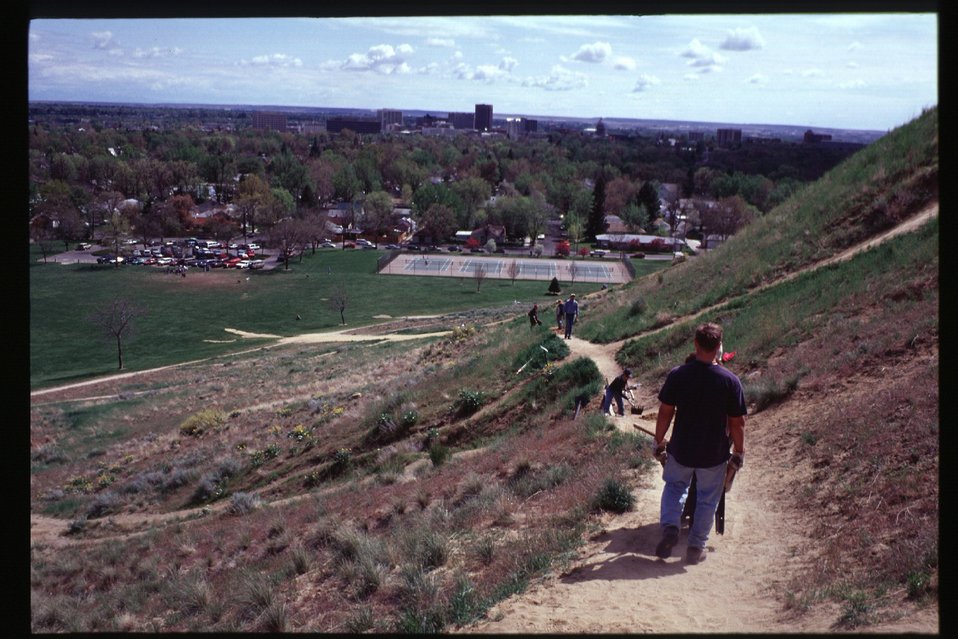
Rangeland and environmental education Boise Front Tending our Foothills Trail work Camels Back Park Four Rivers Field Office LSRD Lower Snake River District